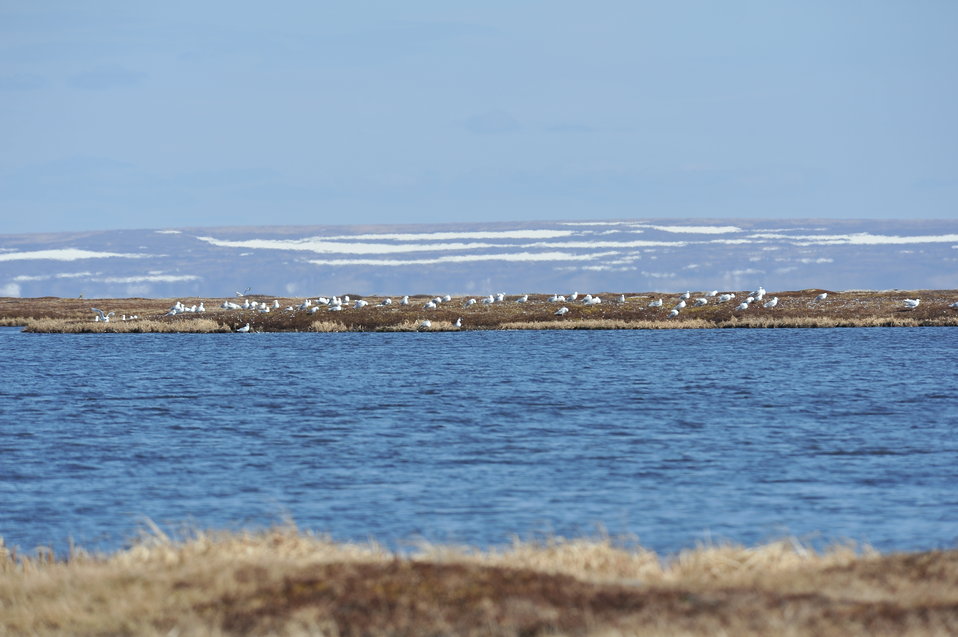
Non-breeding gull colony

USFWS Yukon Delta NWR
This is 'the' spot to be if you are a non-breeding gull.